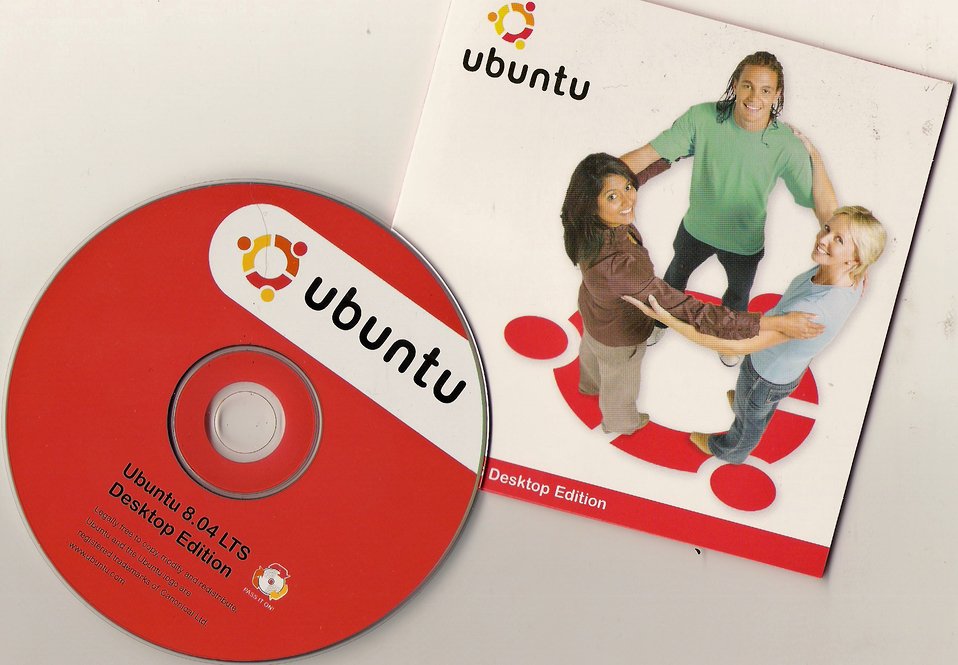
Ubuntu 8.04 shipit CDs